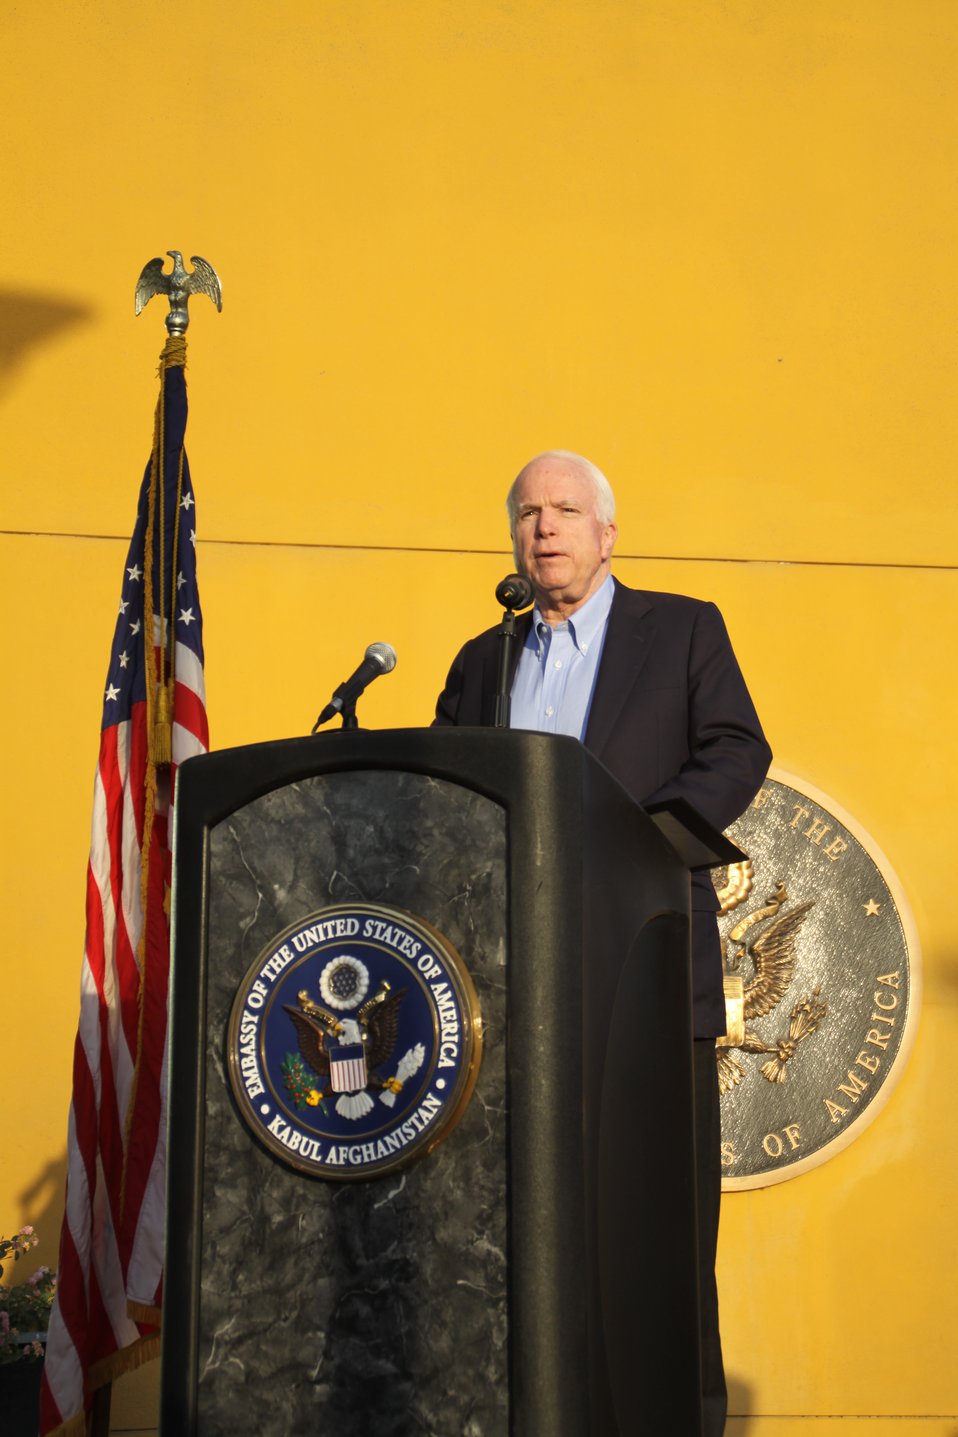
Senator McCain